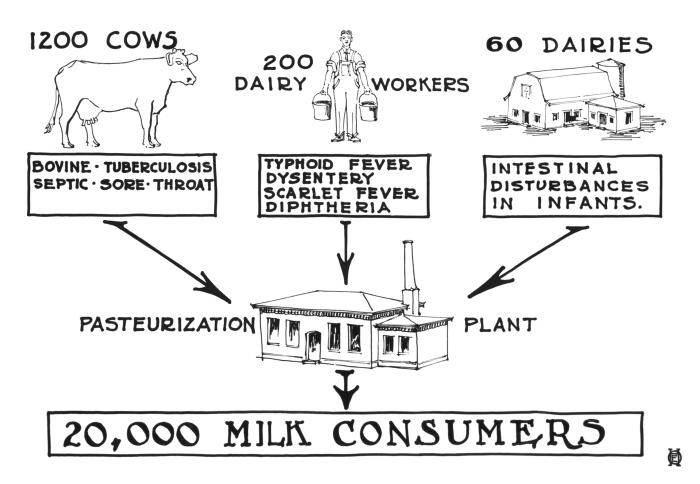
This historic 1925 message from the Minnesota Department of Health noted the potential sources of raw milk contamination, and why pasteurization was an important step in the distribution process. The diagram clearly illustrated the hazards inherent in each system component involved in the delivery of fresh milk to consumers.